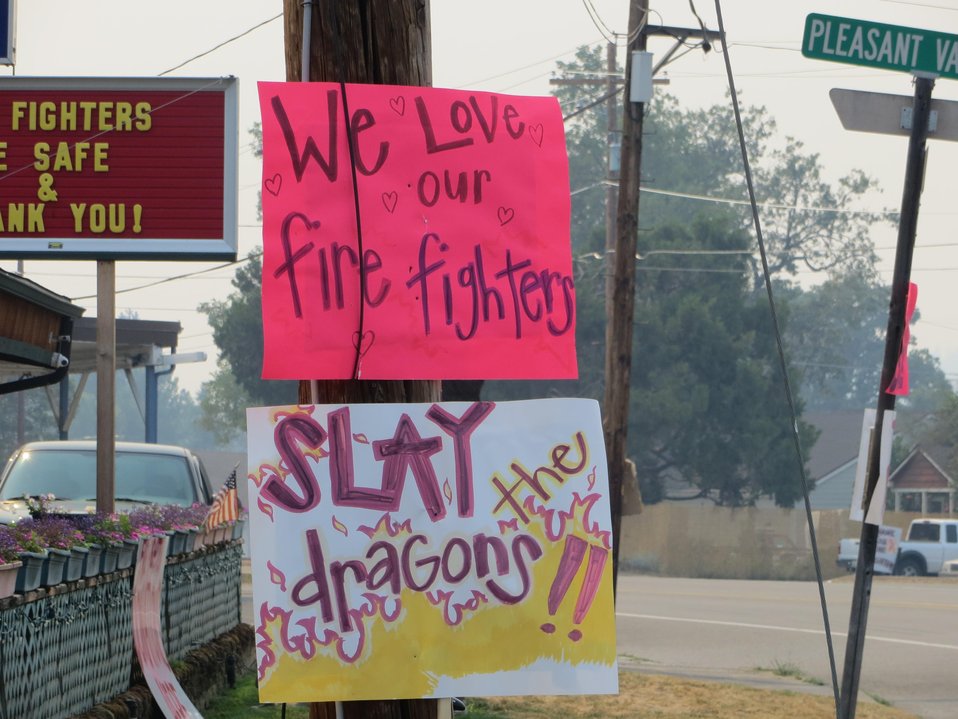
Grants Pass, OR residents post thank you posters for the fire crews that are working on the Big Windy Complex Fires. The Big Windy Complex Fires consists of three fires: The Big Windy Fire, Calvert Peak Fire, and Jenny Fire (formerly the Windy 16 Fire) near Grants Pass, OR. The fires began on Jul. 26, 2013 by lighting have consumed approximately 7, 499 acres.